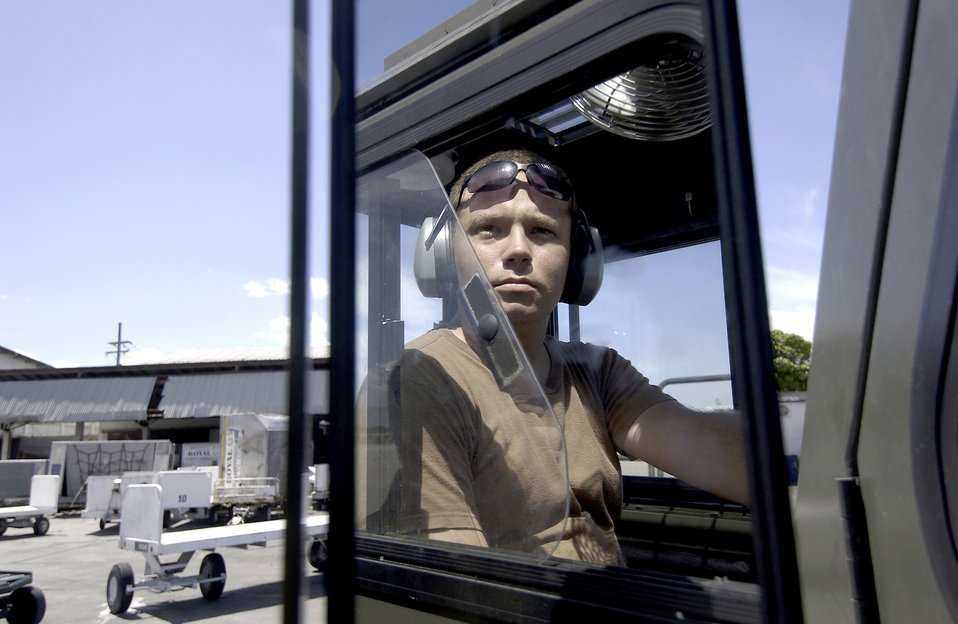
Ready to go

PORT-AU-PRINCE, Haiti (AFPN) -- Senior Airman Ted Griffith waits to unload a C-130 Hercules arriving here from Dyess Air Force Base, Texas, on March 15. He is an aerial porter assigned to the 621st Air Mobility Operations Group at McGuire AFB, N.J.